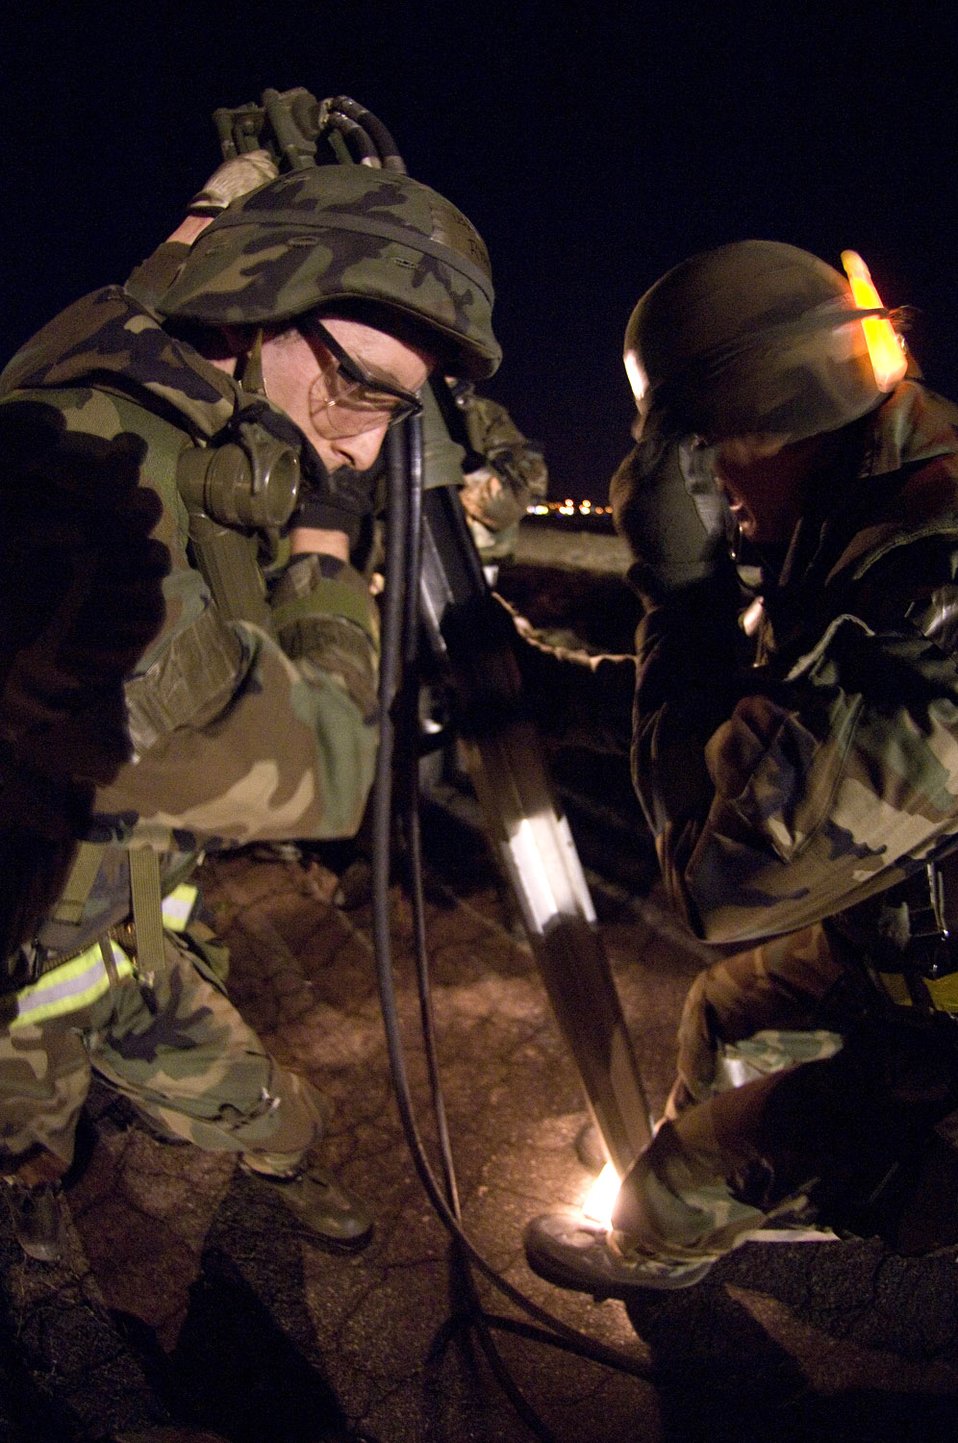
Repair team keeps Kunsan mission going

Members of the 8th Civil Engineer Squadron Airfield Damage Repair team install anchors in the Mobile Aircraft Arresting System April 19 at Kunsan Air Base, South Korea. The MAAS contains the cable used to stop damaged aircraft that cannot stop on their own during landing. Kunsan AB is currently undergoing an Operational Readiness Inspection to test the 8th Fighter Wing's ability to conduct its wartime mission. During exercises, ADR teams perform several functions including crater repair after simulated attacks and airfield lighting during simulated power outages, making it possible to get aircraft back in the air quickly.